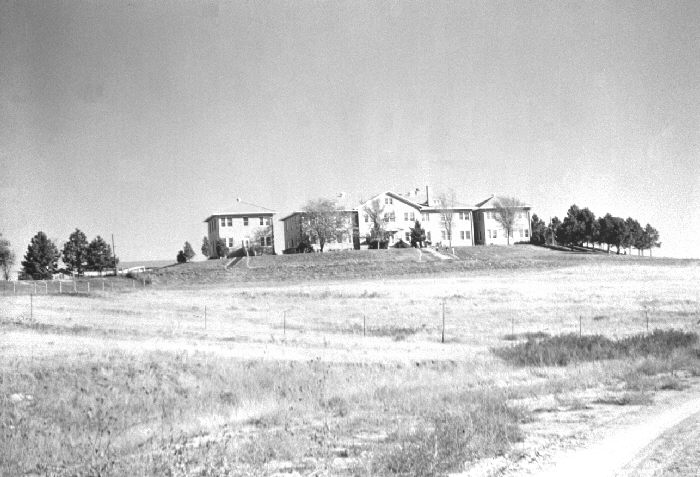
PHS Hospital, Indian Reservation